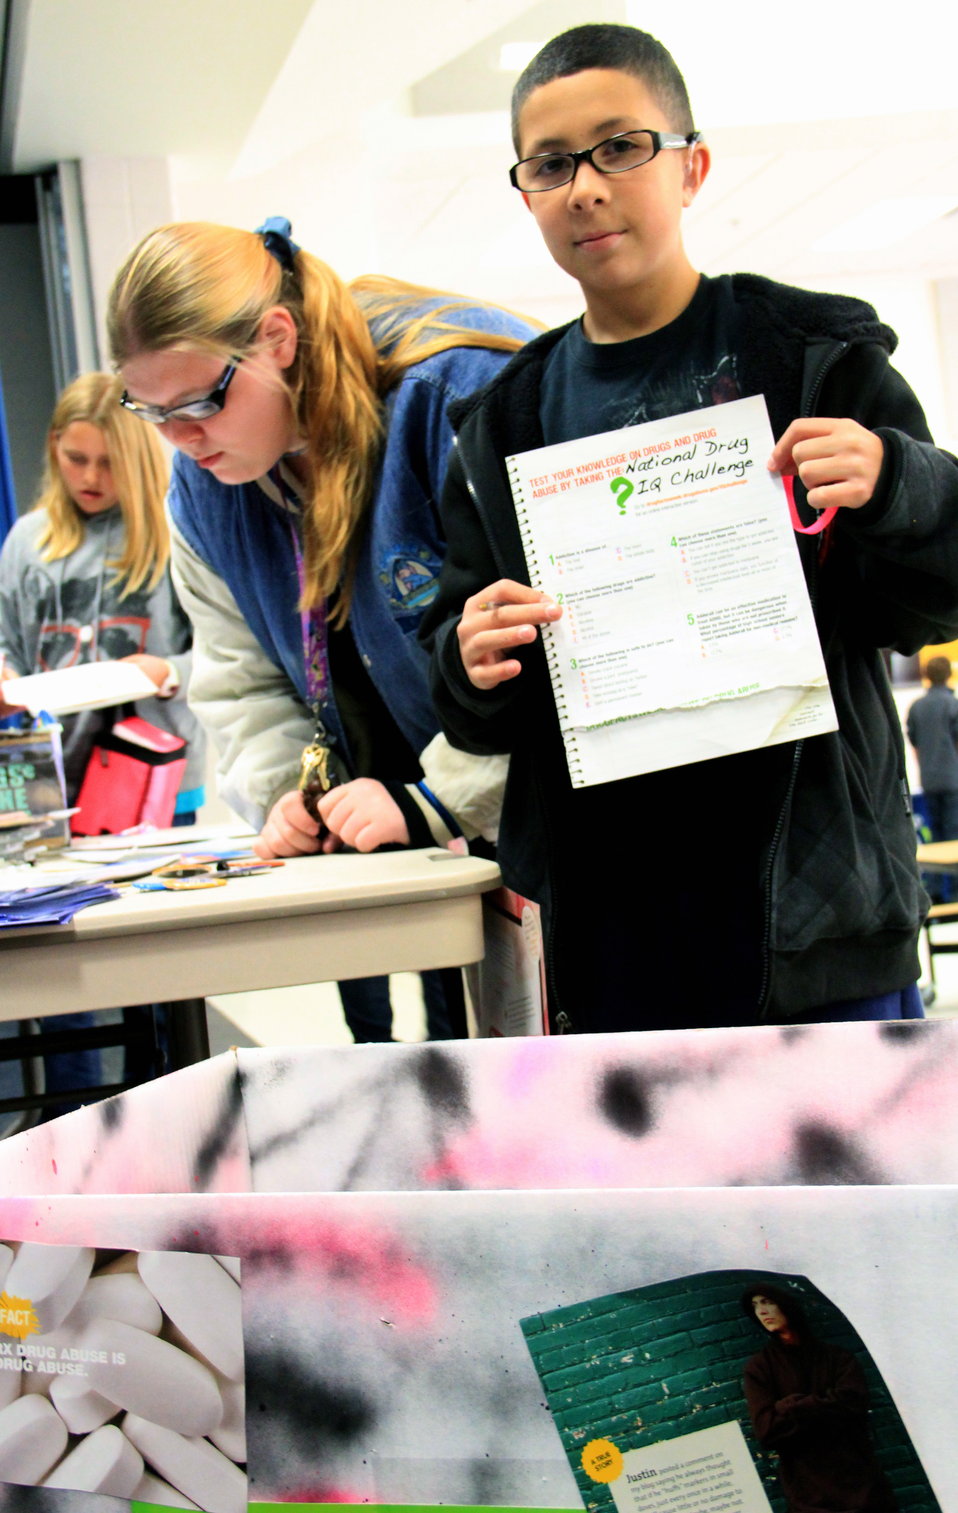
Creighton Middle School Lakewood, Colorado

A student from Creighton Middle School in Lakewood, Colorado stands holding the National Drug IQ Challenge.